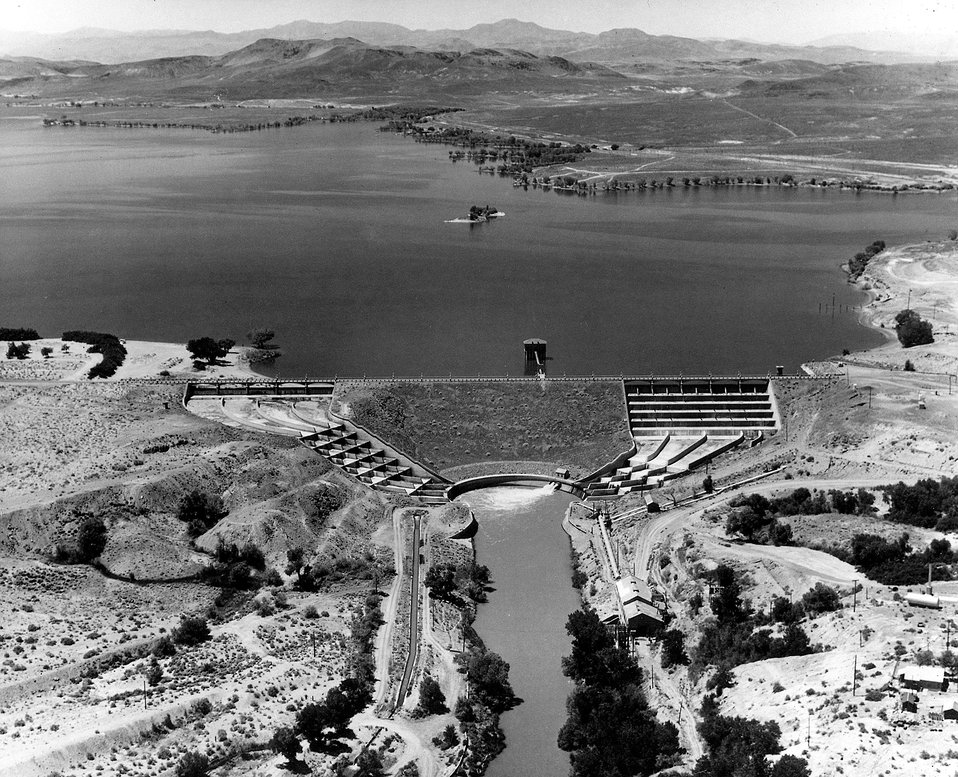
Aerial view of Lahontan Dam on the main Carson River, 18 miles west of Fallon, Nevada. c. 1977